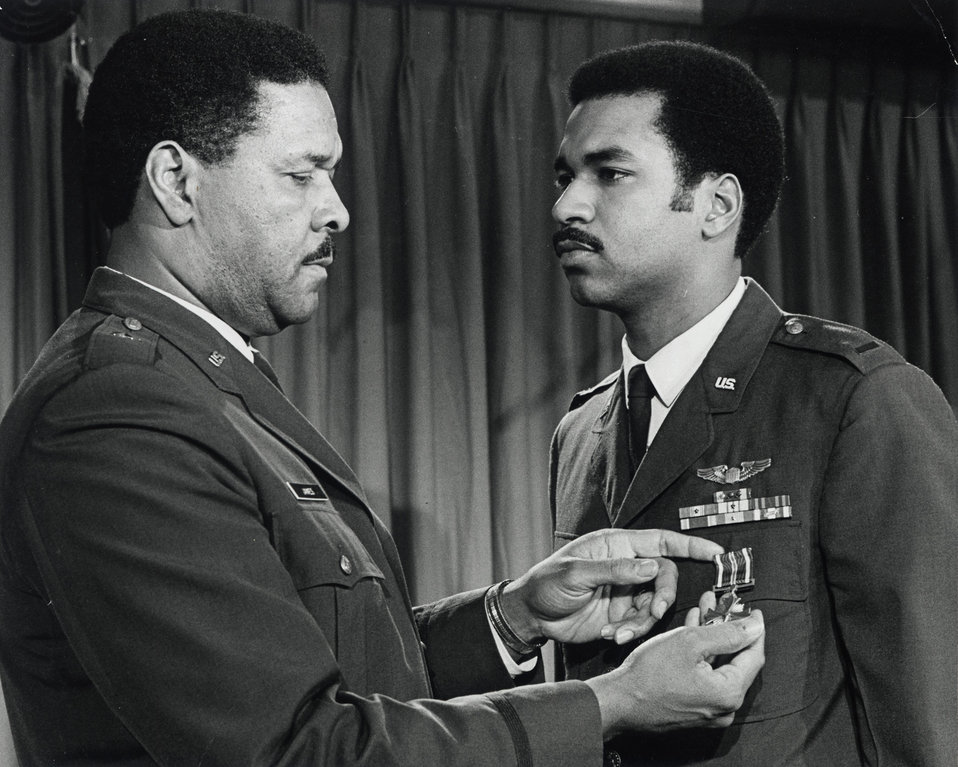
Daniel James III receiving an award from his Dad, Gen. Daniel